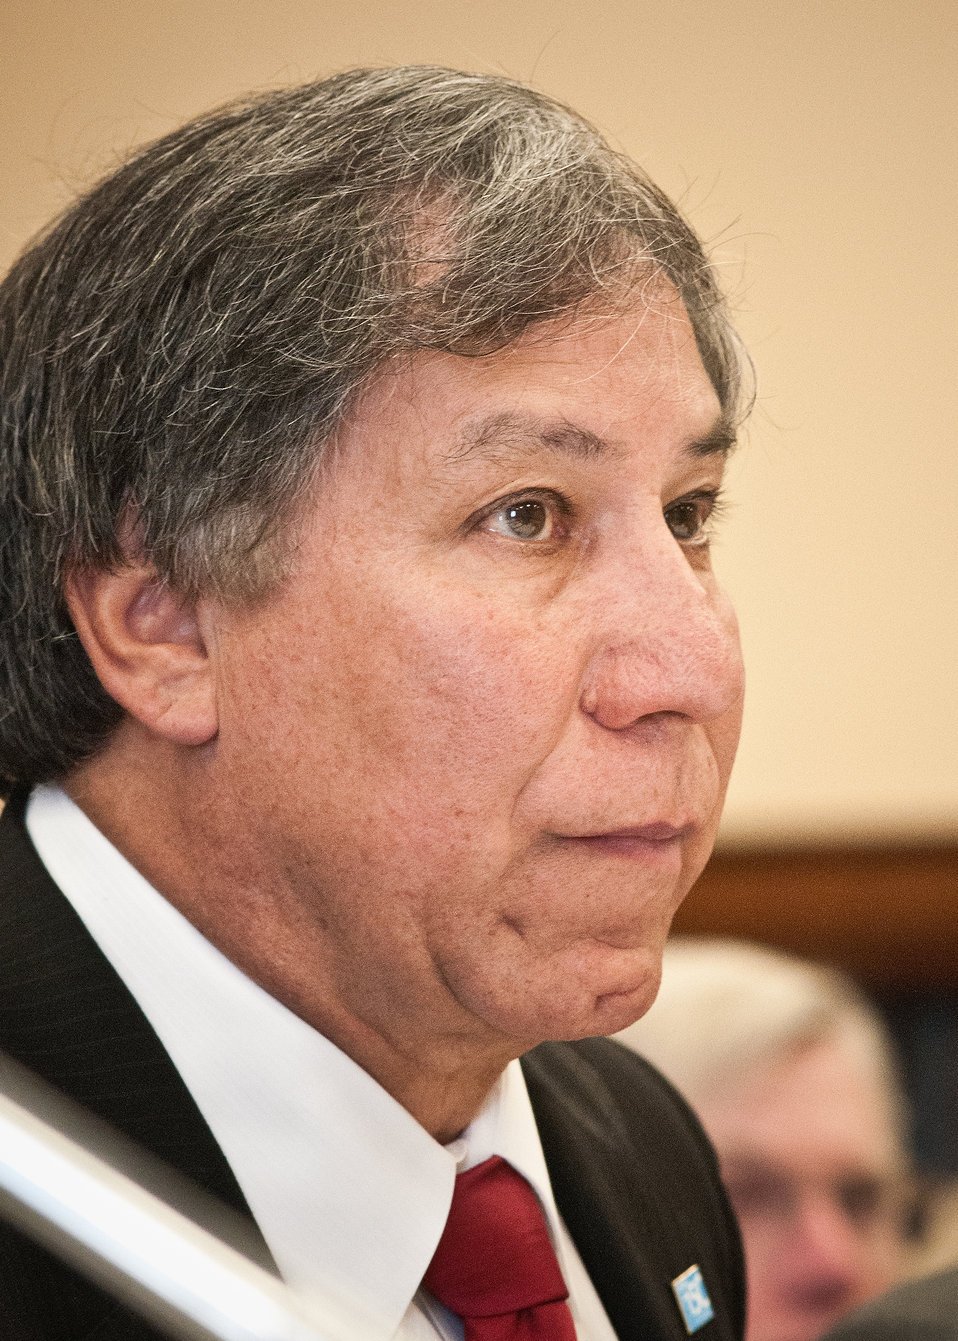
Ed Avalos, Under Secretary, Marketing and Regulatory Programs listens to questions posed by members of the House Agriculture Appropriations Subcommittee while testifying on Capitol Hill with representatives of the Marketing and Regulatory Program agencies on their fiscal year 2013 budget requests in Washington, D.C., Tuesday, March 6, 2012.